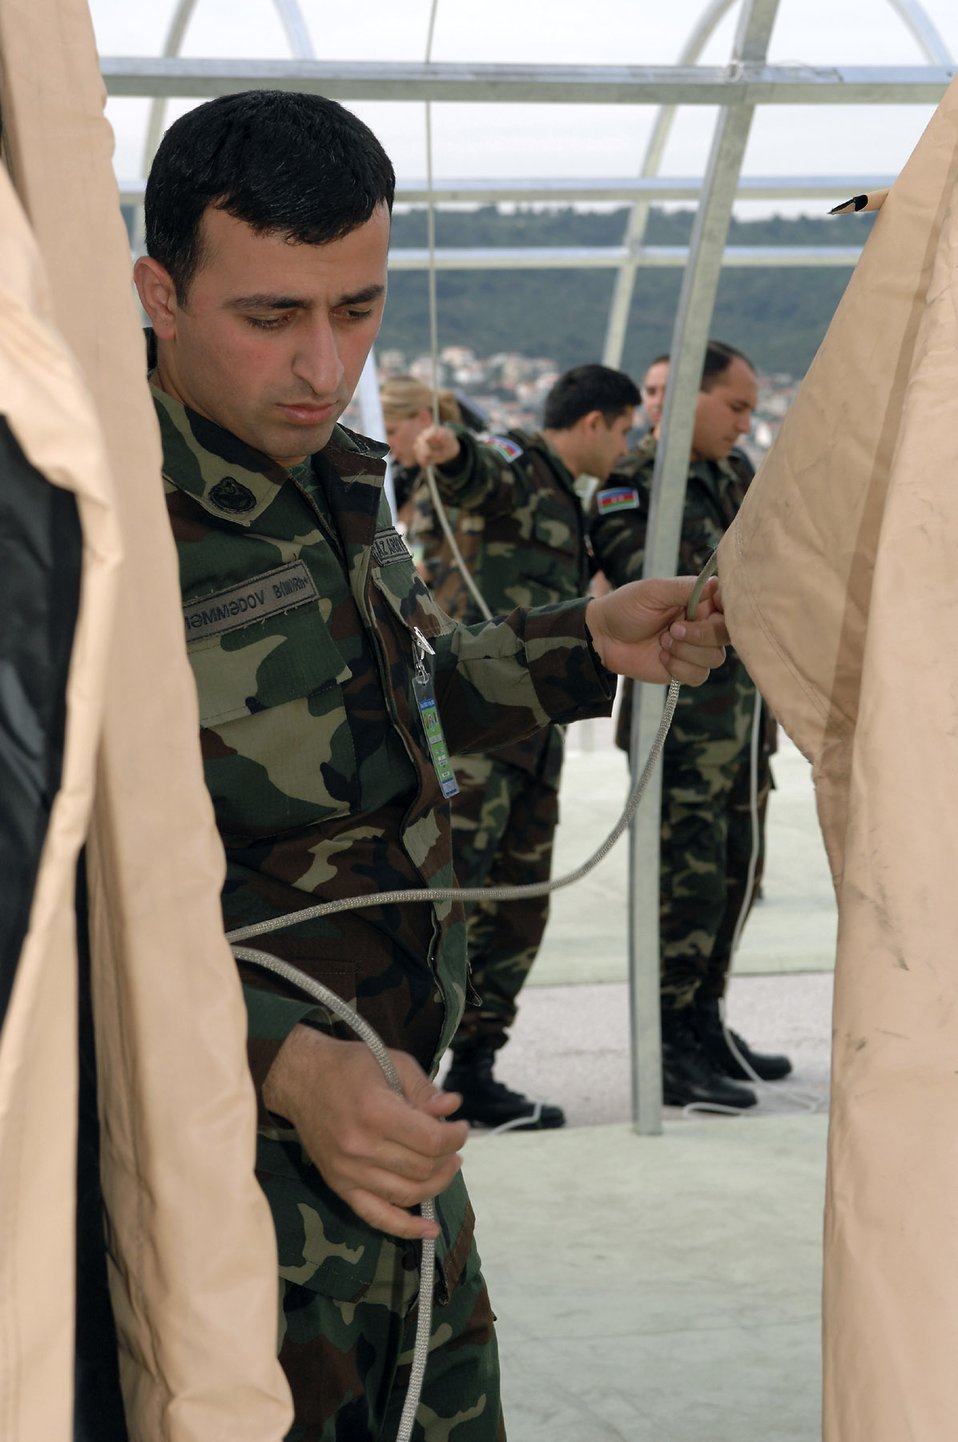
Knot typical training

Azerbaijani Army 1st Lt. Elmir Mammadov learns how to assemble an expeditionary medical squadron tent during the 2008 Medical Training Exercise in Central and Eastern Europe May 5 at Dijulje Training Base, Croatia. The course is one of 11 courses offered during the exercise. Fifteen nations are participating in the exercise from May 2 through 14. The exercise focuses on mass-casualty training scenarios and humanitarian aid in response to crises situations, and a Joint Chiefs of Staff regional/multilateral exercise sponsored by U.S. European Command. Croatia officials are hosting the 2008 exercise, which drew about 400 multinationals in support of the Partnership for Peace initiative.